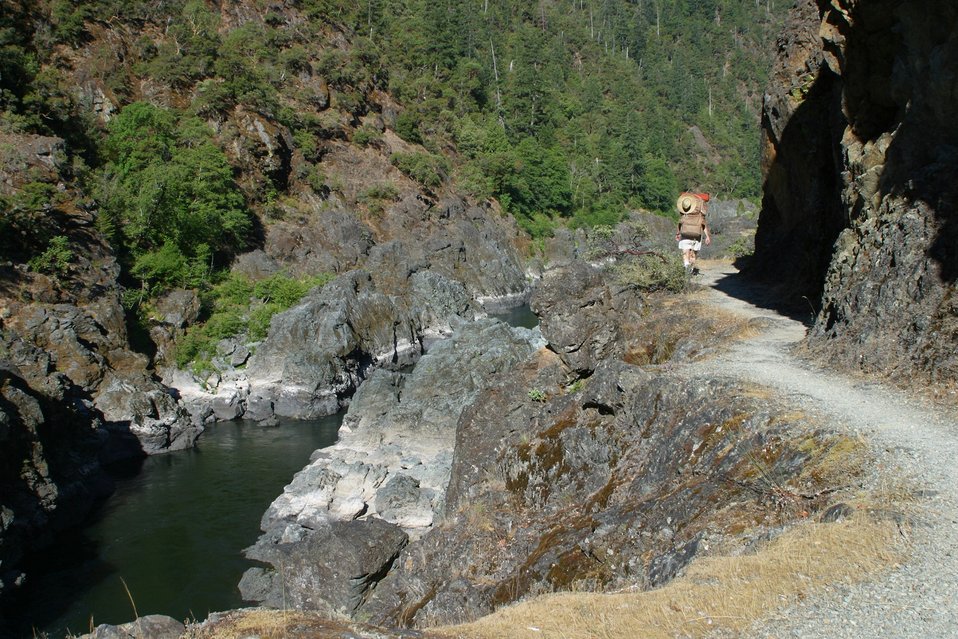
Hiking the Rogue River Trail between Mule Creek and Blossom Rapids.